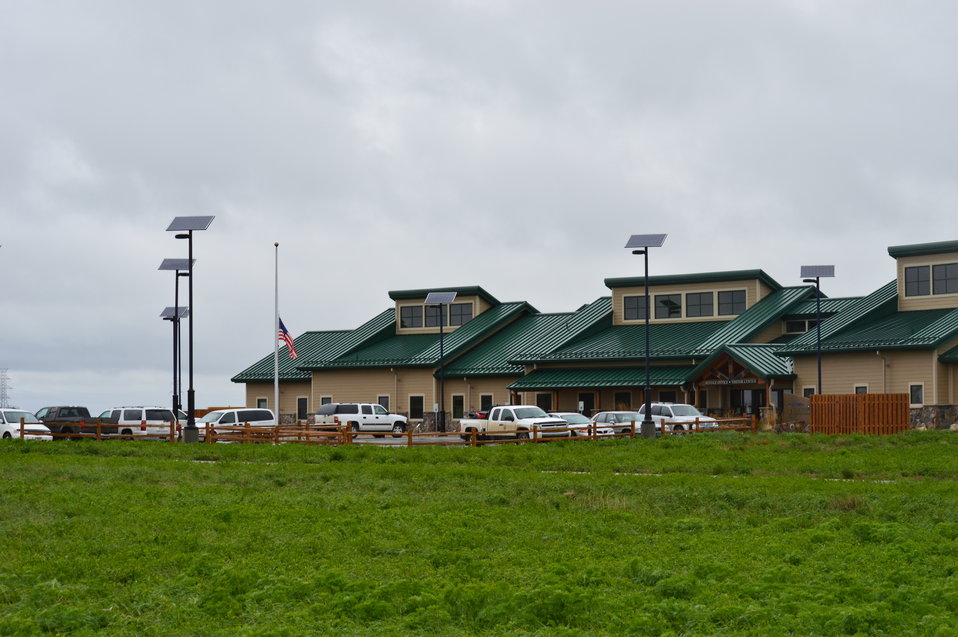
Audubon NWR Visitor Center and offices

Audubon NWR Visitor's Center and office building has an exhibit hall featuring wetlands and grassland habitat, migratory birds, refuge history and more. Also in the building are USFWS offices and a store.